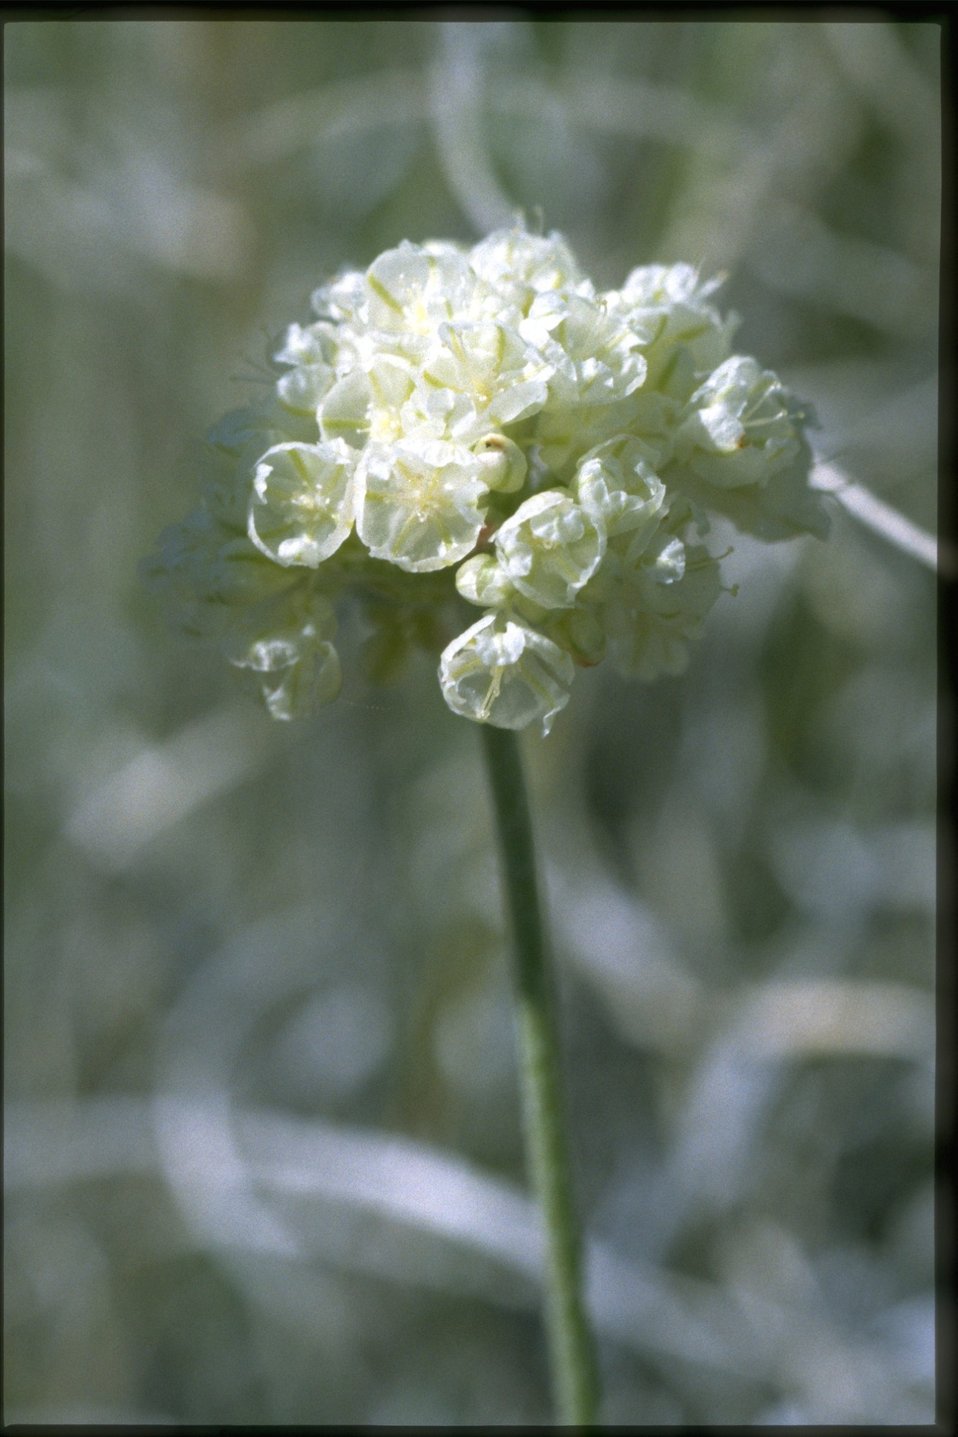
Medium shot of Eriogonum.